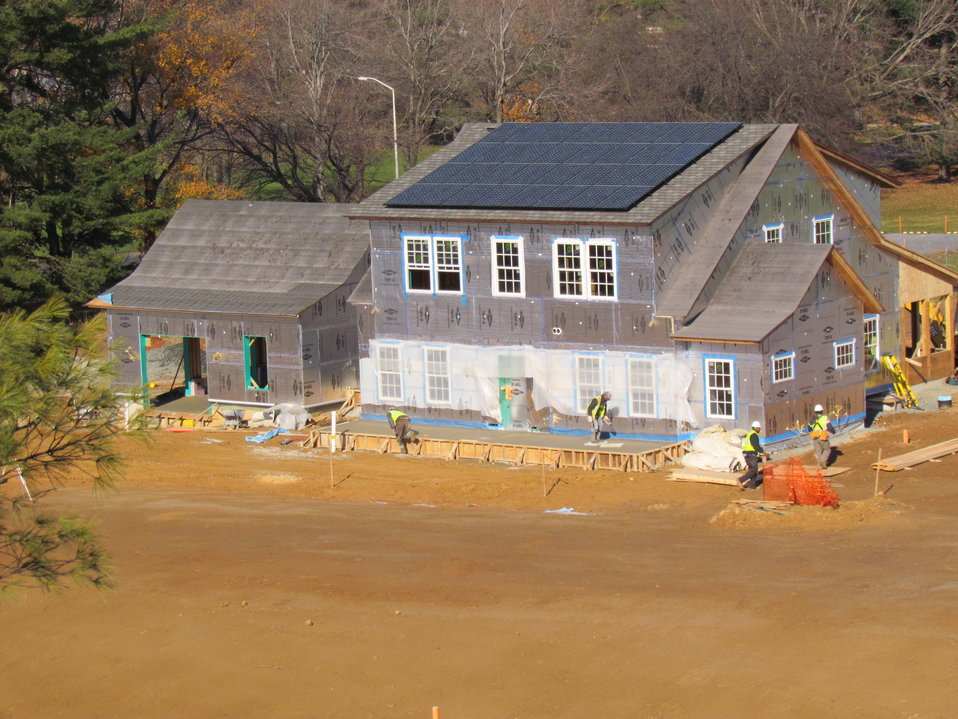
Net-Zero Energy Residential Test Facility - Photo showing workmen preparing to pour the front porch's concrete floor.